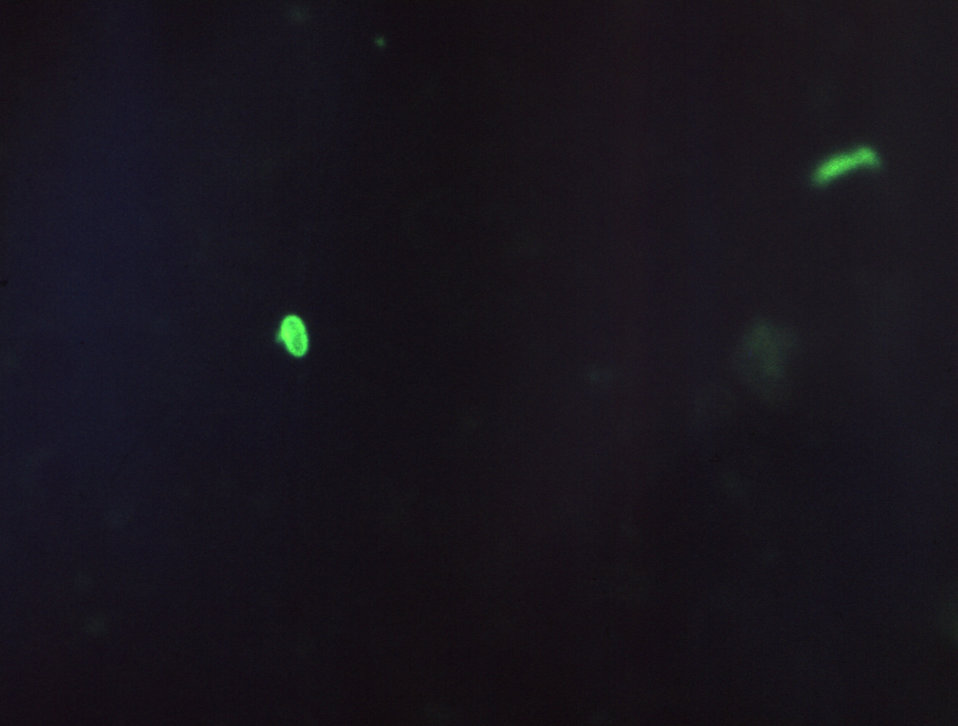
Magnified 98X, this glutaraldehyde-fixed, fluorescent antibody (FA)-stained photomicrograph of a sternal impression smear tissue sample, revealed the presence of a Yersinia pestis, formerly Pasteurella pestis, Gram-negative bacterium.